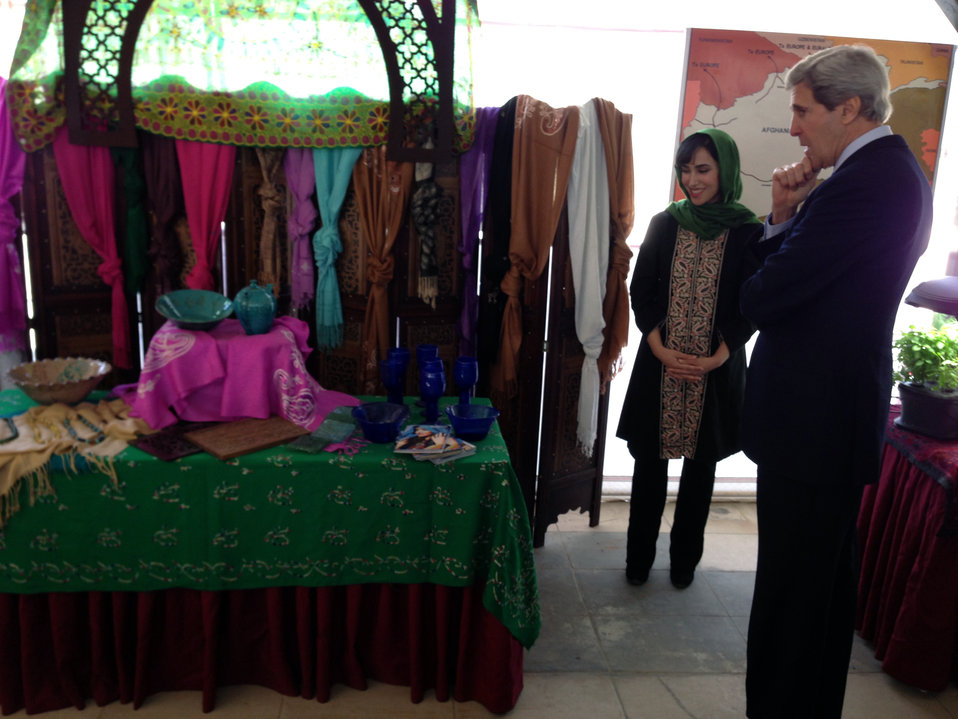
Secretary Kerry Tours Women’s Entrepreneurship Showcase in Kabul

U.S. Secretary of State John Kerry visits with Nadima Sahar, senior partner of the Galleria, which has the largest collection of fine arts in Afghanistan during a tour of local businesses in Kabul, Afghanistan on March 26, 2013.